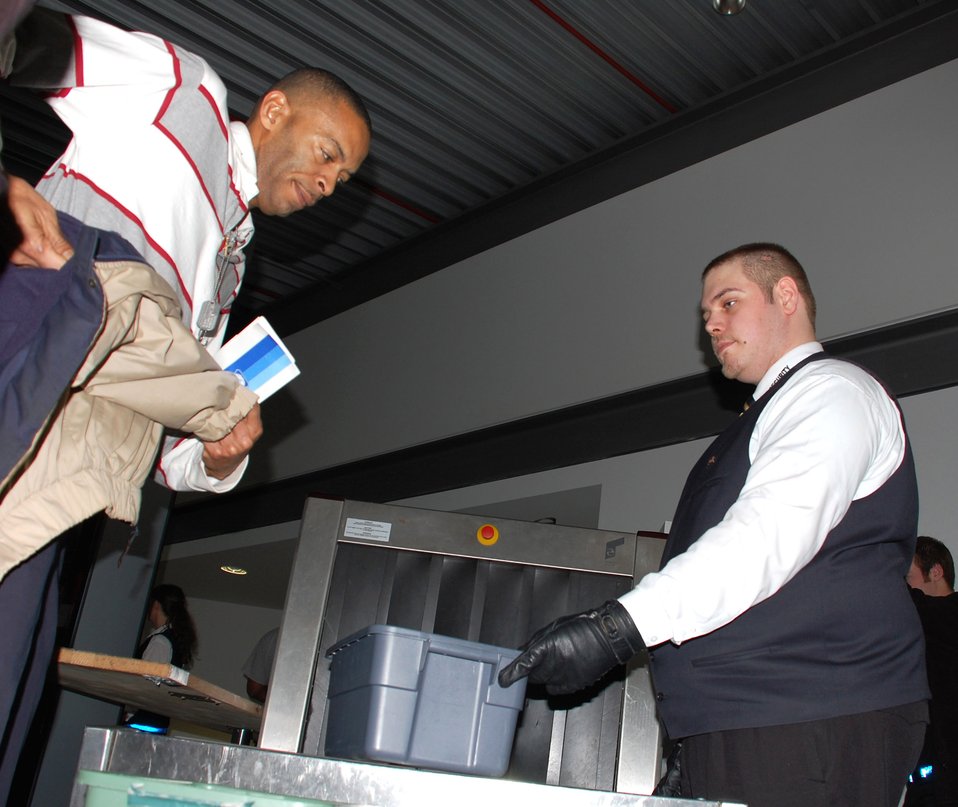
Ramstein passenger terminal streamlines operation

A passenger empties his pockets on his way through a newly located security checkpoint at the Ramstein Passenger Terminal Jan. 18 at Ramstein Air Base, Germany. The metal detectors and carry-on baggage screening devices used to be at the front door of the terminal that caused long waits. The change is part of an Air Force Smart Operations for the 21st century initiative.